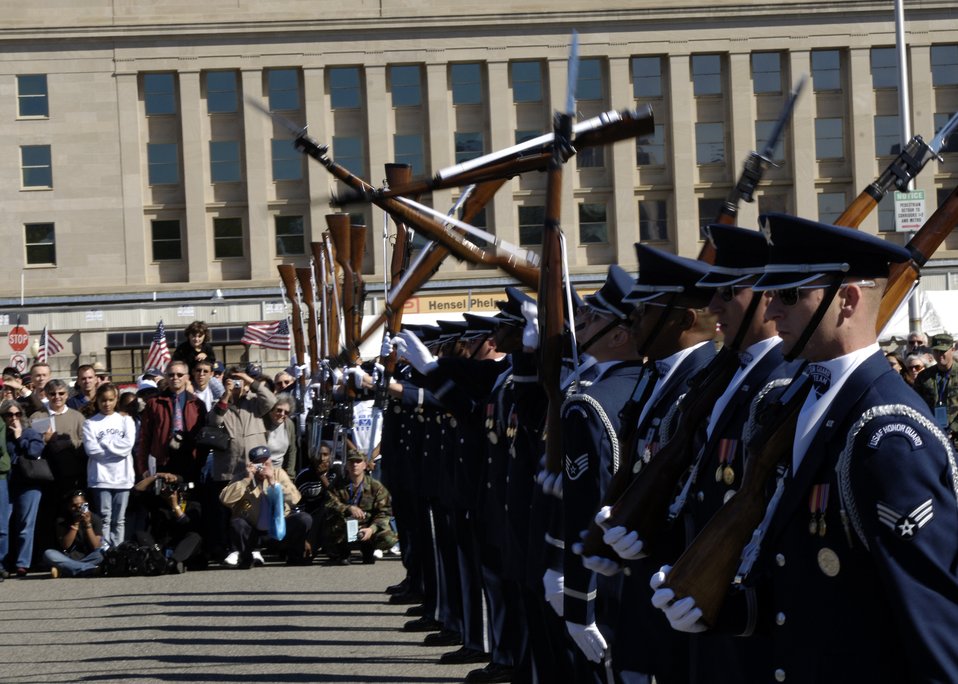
Weapons Wave

Members of the United States Air Force Drill Team perform during the Air Force open house at the Pentagon on Saturday, Oct. 14, 2006. The open house is running in conjunction with the official ceremony to dedicate the Air Force Memorial. President George W. Bush will join Senior Defense Dept. and Air Force officials in a ceremony to present the memorial to the Nation. Desiged by the late James Ingo Freed the memorial with its three soaring spires inspired by the U.S. Air Force Thunderbirds bomb burst manuever, pays tribute to and honors the patriotic men and women of the U.S. Air Force and its predeccessor organizations. An open house will run near the Pentagon in conjunction with the dedication ceremony which will feature performances by the U.S. Air Force Band, the U.S. Air Force Honor Guard drill team, and will culminate with a concert featuring country music performer LeeAnn Womack.